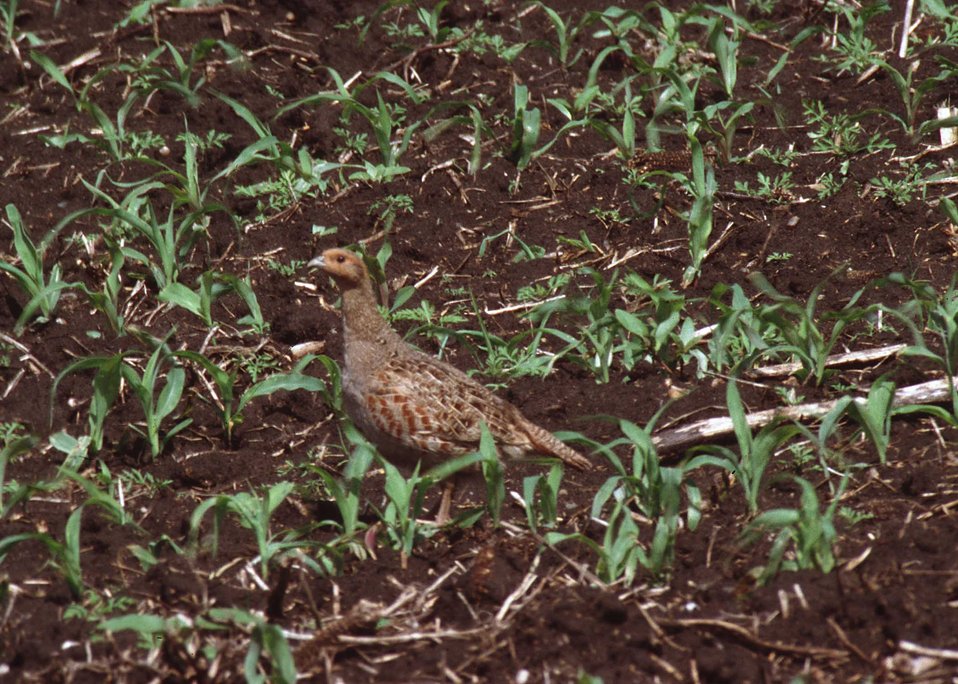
Hungarian partridge in a South Dakota corn field.